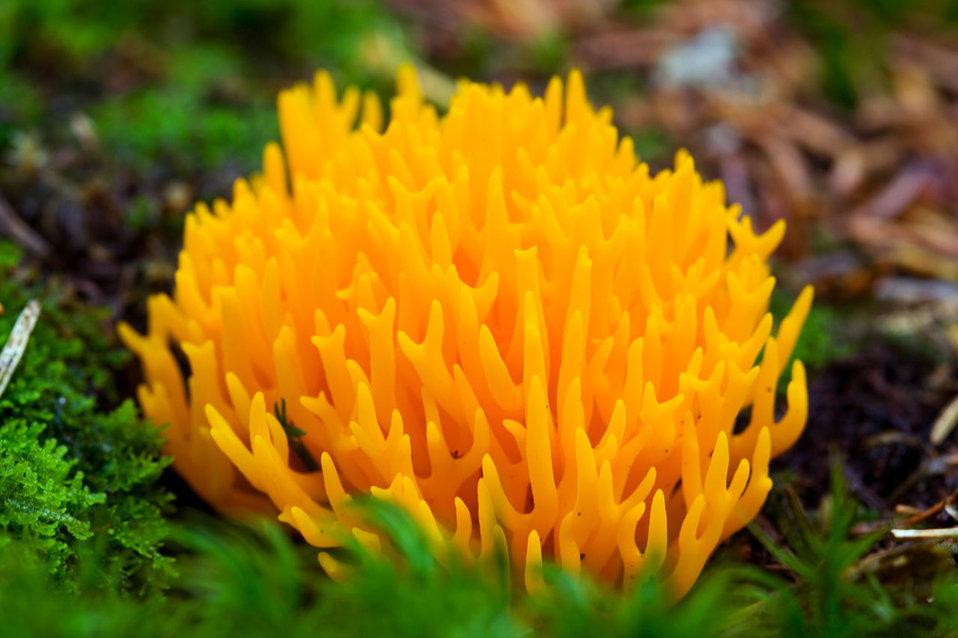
Wild mushroom

Detailed photo of a yellow wild mushroom.